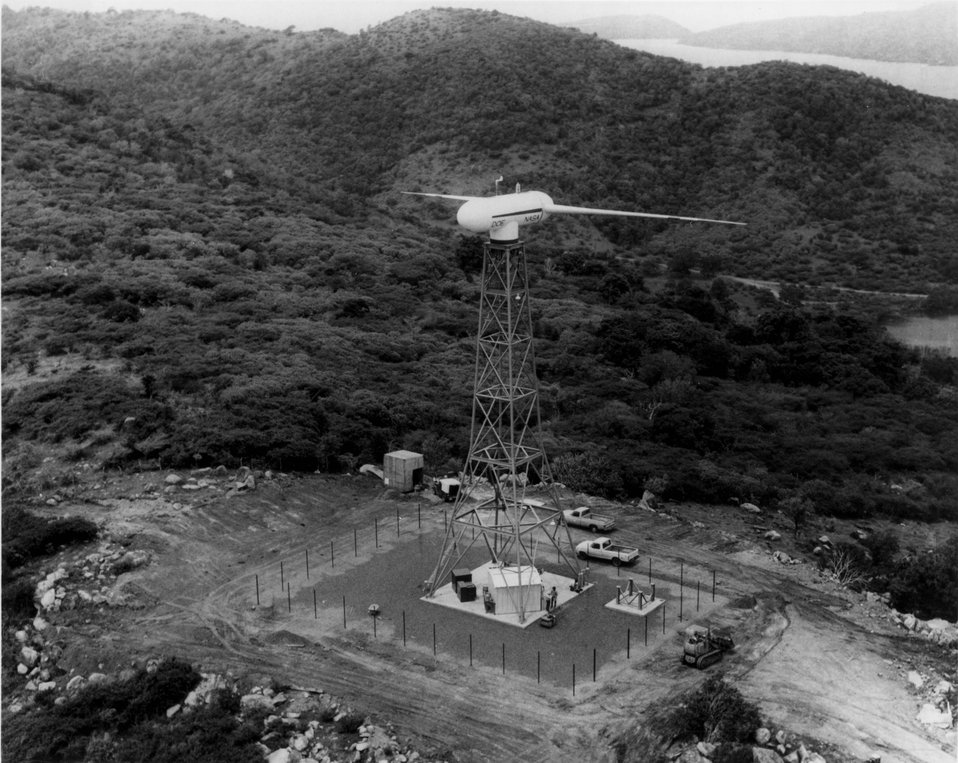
A large modern wind turbine generator is being field tested on Culebera Island, Puerto Rico for the Department of Energy and the National Aeronautics and Space Administration. c. 1978